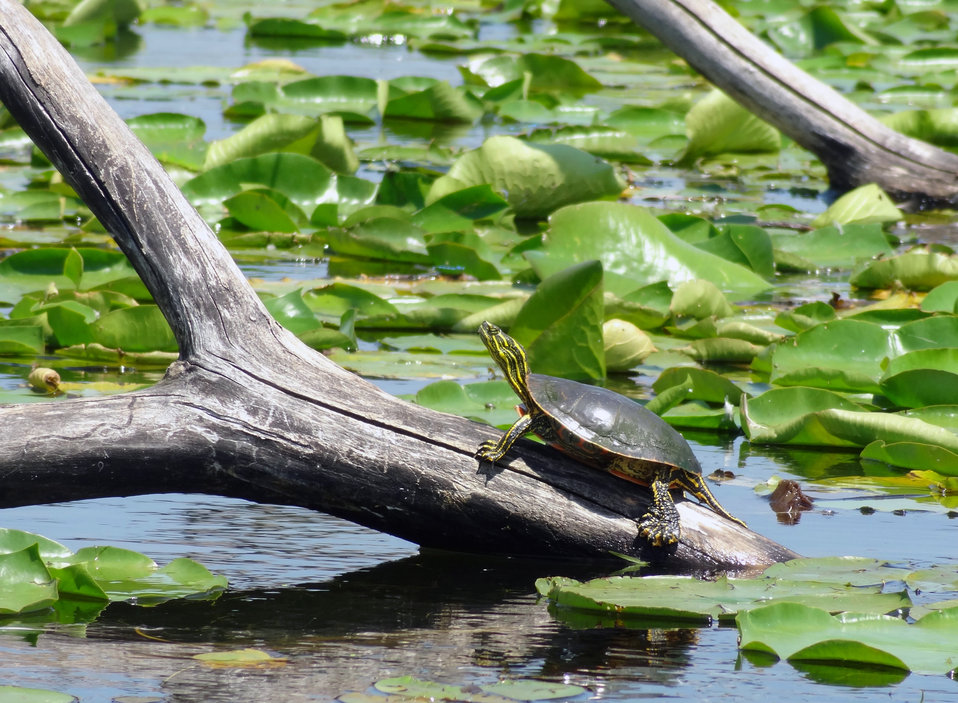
Painted Turtle

A painted turtle enjoying the sunshine at Minnesota Valley National Wildlife Refuge!